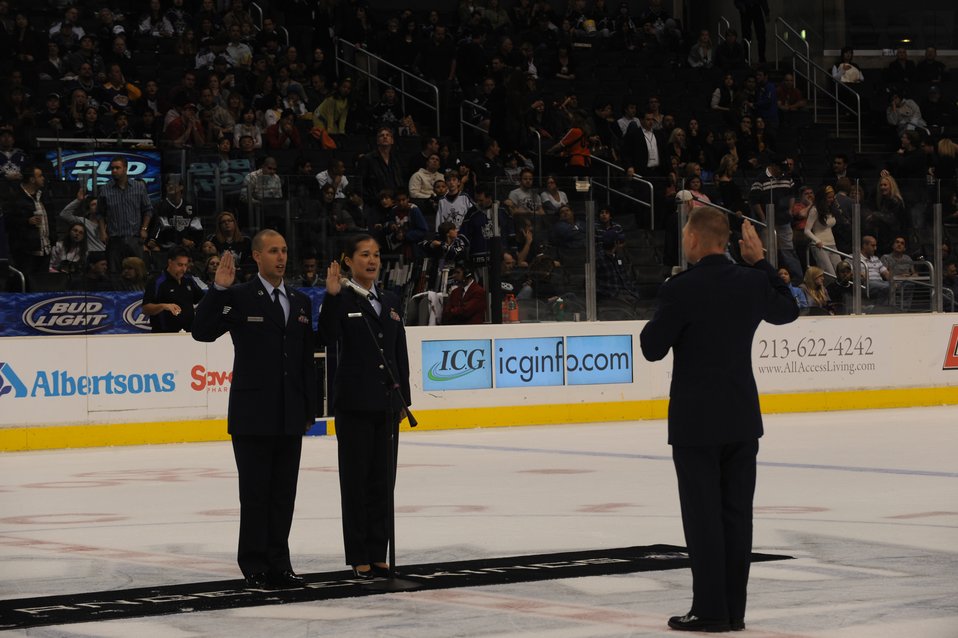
Airmen reenlist during a Los Angeles Kings hockey game

Col. John Odey swears in Tech. Sgt. Surita Rorie and Staff Sgt. Robert Coddington on the ice of the Staples Center, Los Angeles, Calif., Nov. 15. Sergeants Rorie and Coddington reenlisted during a Los Angeles Kings vs. Nashville Predator game as part of Air Force Week Los Angeles. Colonel Odey is the 95th Communications Group Commander, Edwards Air Force Base, Calif. Sergeants Rorie and Coddington are stationed at Edwards Air Force Base, Calif. Air Force Week Los Angeles is an event designed to educate the local population about the Air Force's capabilities and missions through various activities and exhibitions all over the Los Angeles area. It provides an up close and personal look at the men and women of the Air Force serving worldwide in the defense of freedom. Air Force Week Los Angeles runs from Nov. 14 to 21.